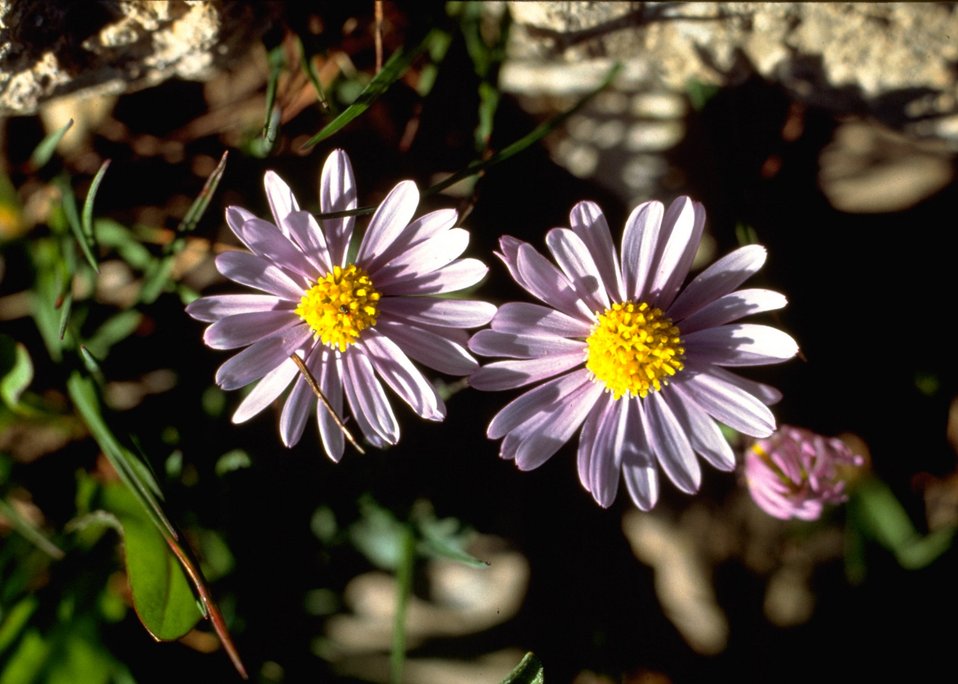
This is the European species of aster to which the generic name Aster is attached.